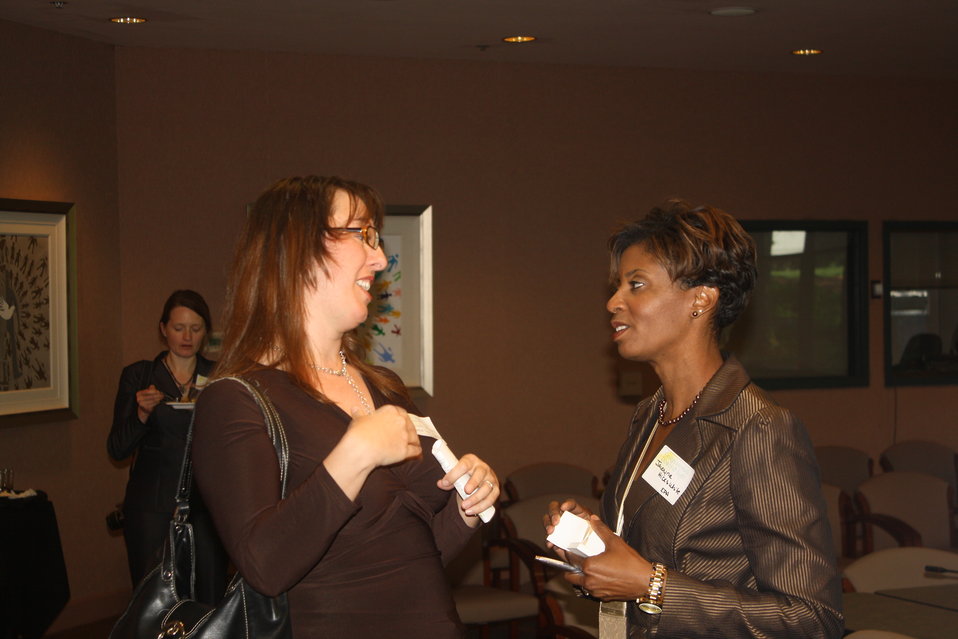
Faith-Based and Neighborhood Partnership launch at Atlanta's Carter Center